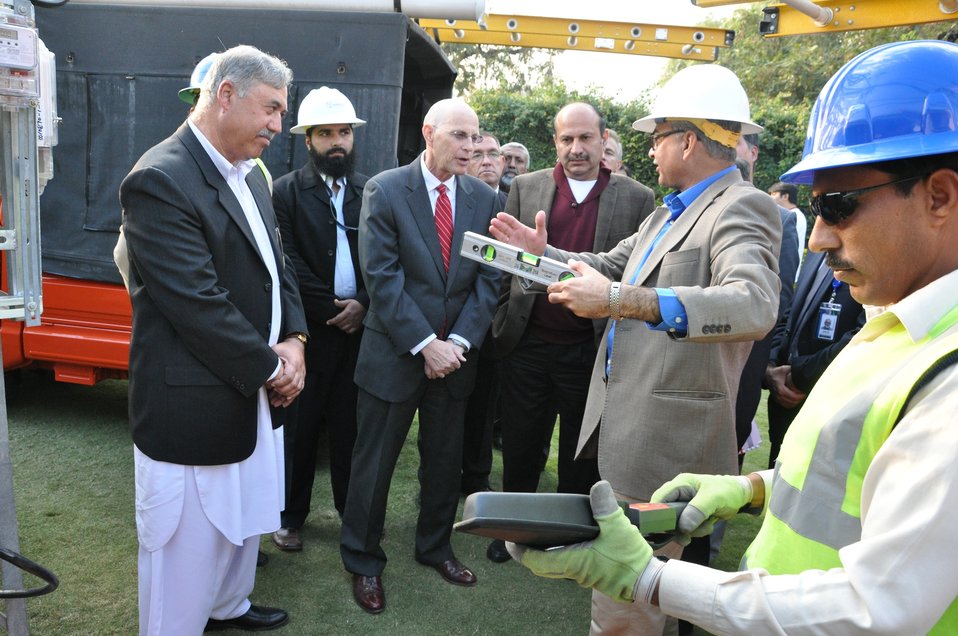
Breifing about linemen tools and loaders (7)